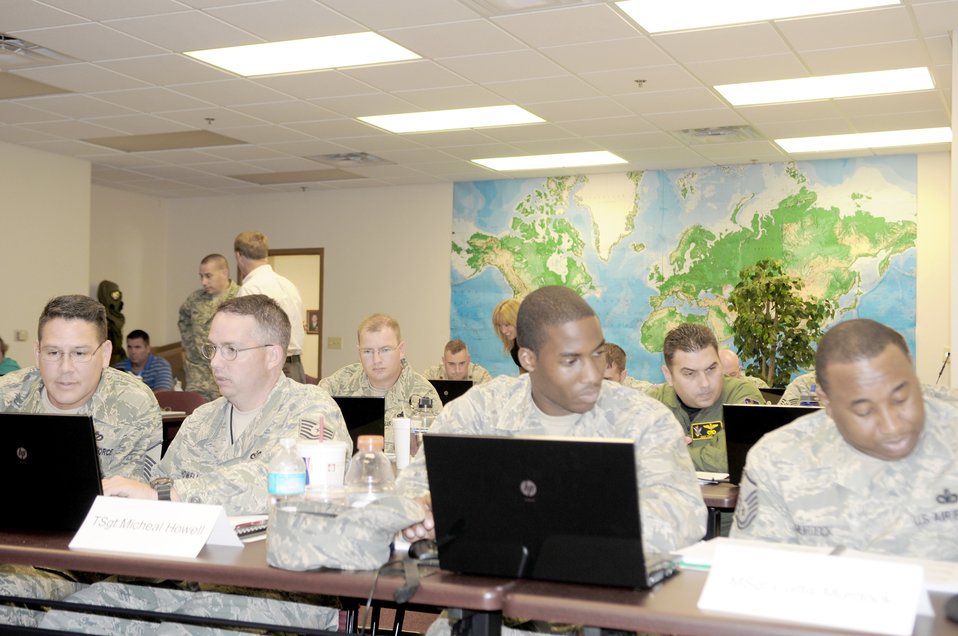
Integrated defense software

Instructors help students during the Integrated Defense Risk Management Process and ForcePRO workshop being held at Moody Air Force Base, Ga., July 30, 2010. Students worked together in teams to answer and complete classroom exercises in designated time periods.